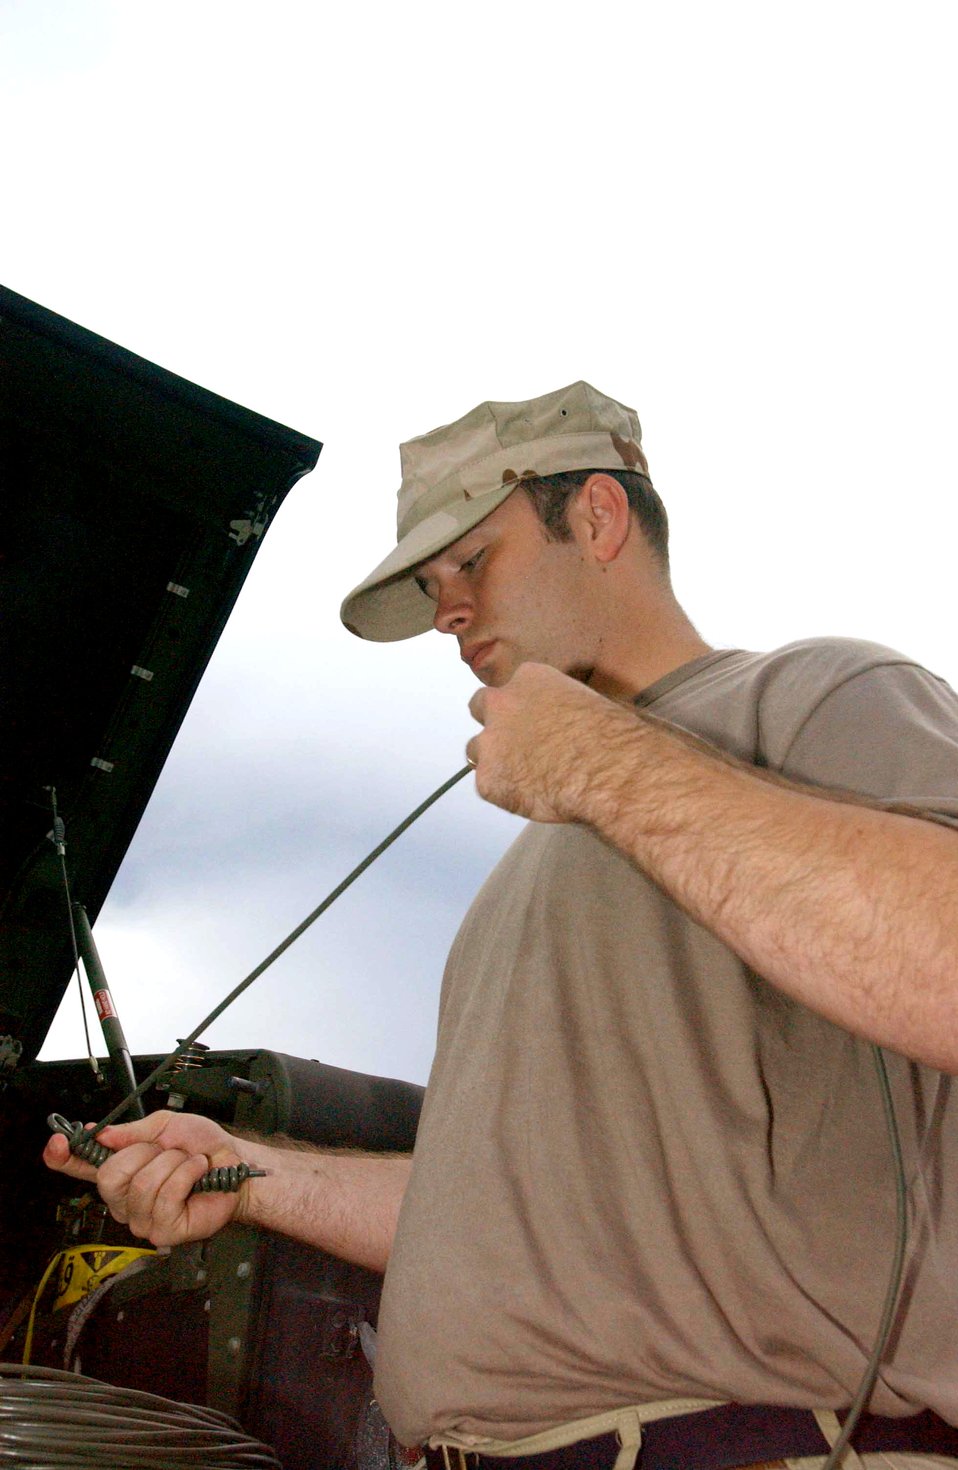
Initial success or total failure; no in between for EOD

OPERATION ENDURING FREEDOM -- Senior Airmen Steven Cayton prepares a detonation cord for a firepower demonstration at a forward-deployed location. He is an explosive ordnance disposal technician with the 40th Expeditionary Civil Engineer Squadron and is deployed from Luke Air Force Base, Ariz.